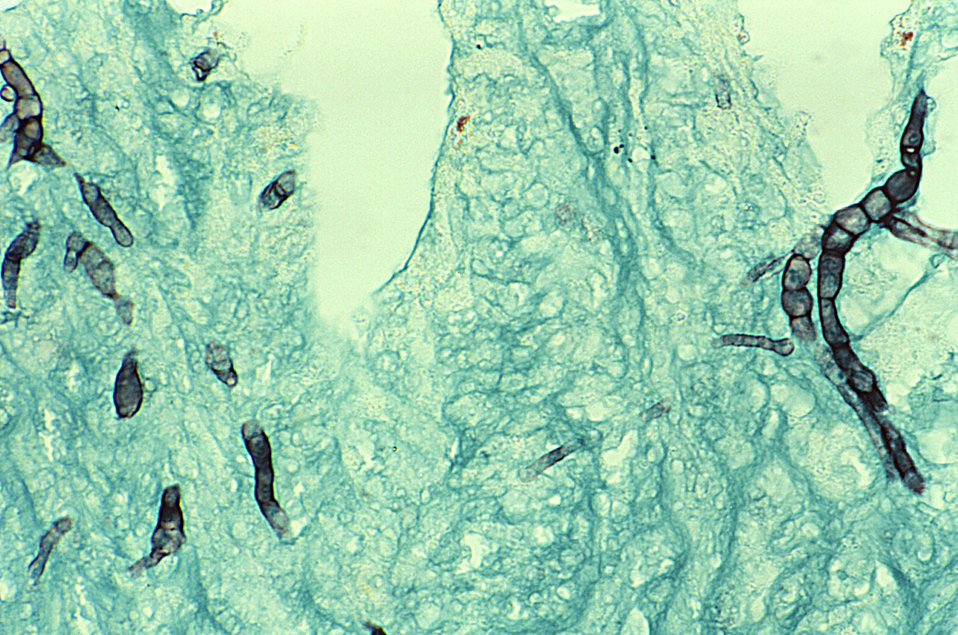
Magnified 400X, this photomicrograph revealed the presence of saprophytic Tritirachium roseum fungal organisms in this Gomori and methenamine-silver nitrate-stained corneal tissue specimen.